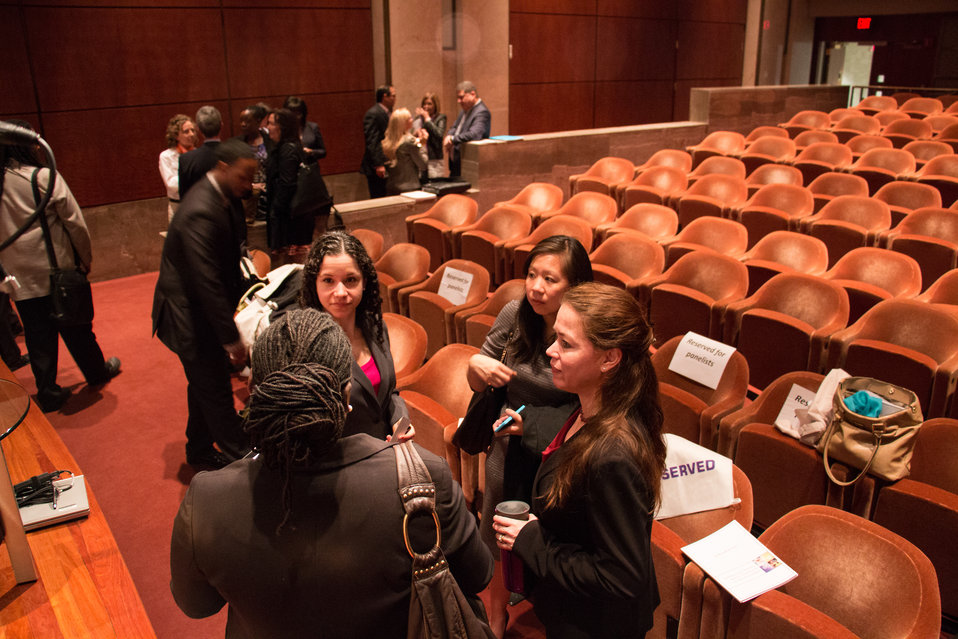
VHAP Launch (500 of 511)